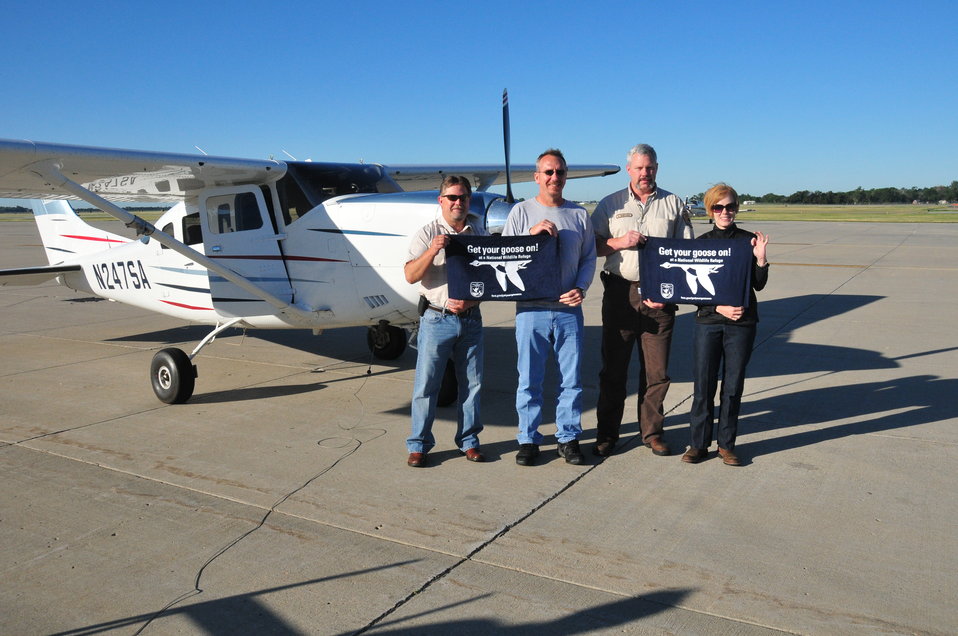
Get Your Goose On!

The national meeting for regional chiefs of the National Wildlife Refuge System is held three times a year in different locations around the country. This 2012 meeting took place in McPherson County, South Dakota, and focused on the Dakota Grassland Conservation Area.

This photo was taken on the Wade Weiszharr and Family Ranch, which contains perpetual U.S. Fish and Widlife grassland and wetland easements. This site is also located in the heart of Prairie Pothole Region, making it extremely productive migratory bird habitat and a great place to “Get your goose on!”

In this photo Aaron Archibeque, Jeff Ruppert, Sean Bayless, and Serena Selboe 'get their goose on' next to the region's Cessna 206! This aircraft is primarily used to monitor grassland and wetland easements in the area.